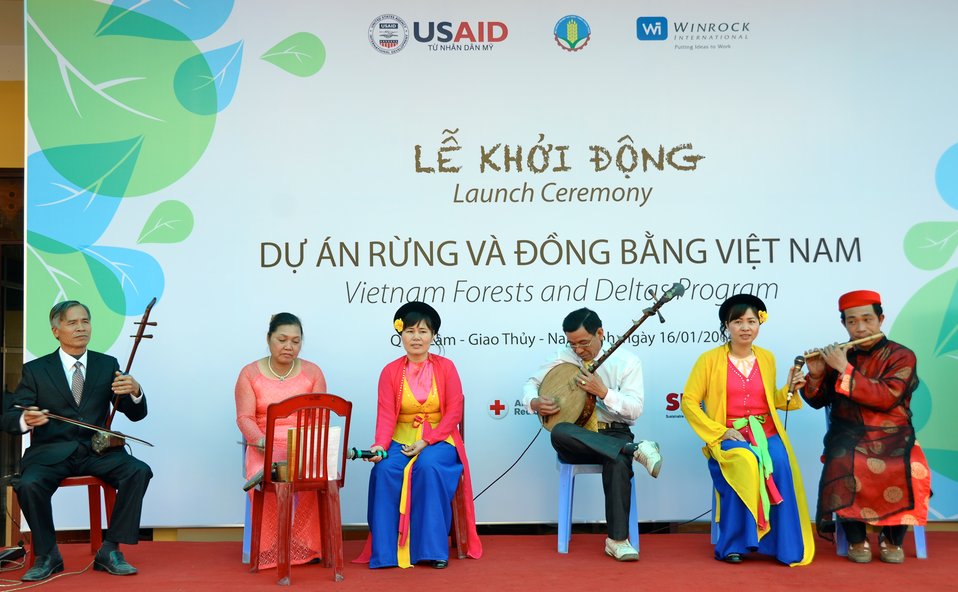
USAID launches the Vietnam Forests and Deltas project in Nam Dinh province.